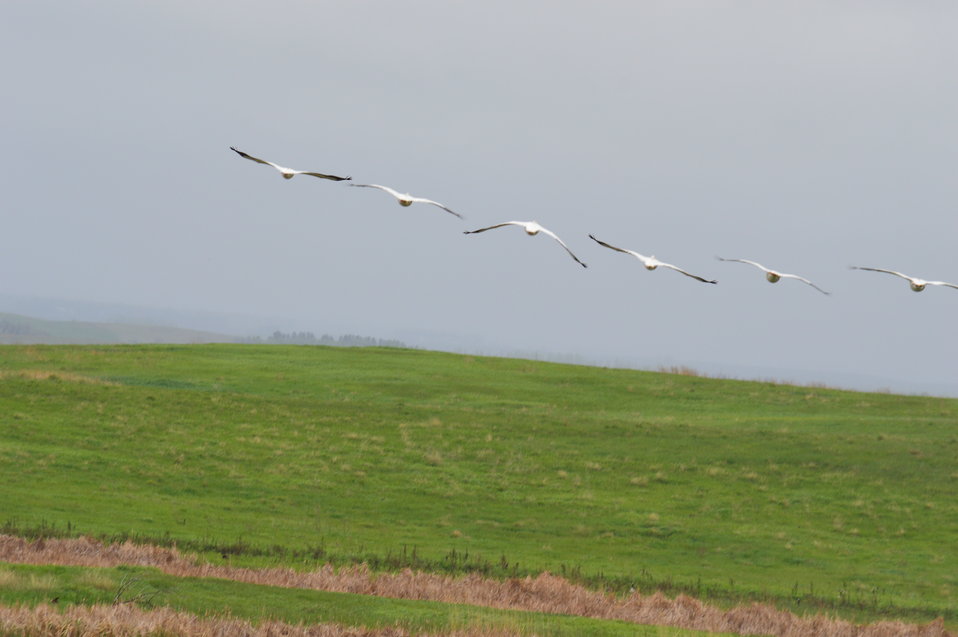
Flock of birds

Scenery and wildlife and Audubon National Wildlife Refuge in North Dakota.